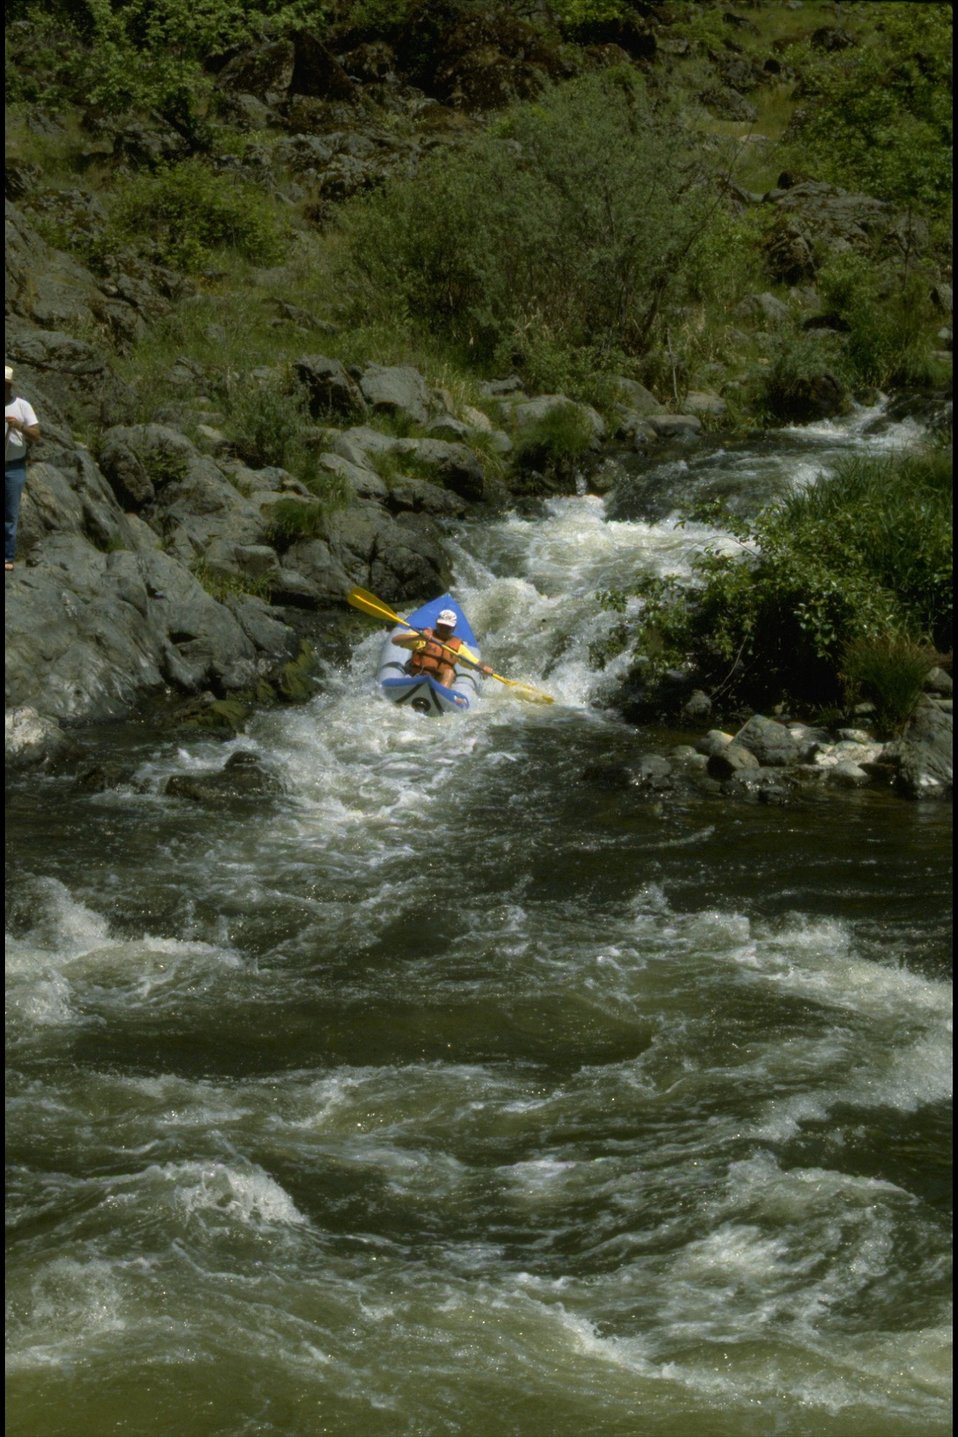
Rogue River - Rainie Falls, wild section. Inflatable Kayak in middle of the "Fish Laddre".